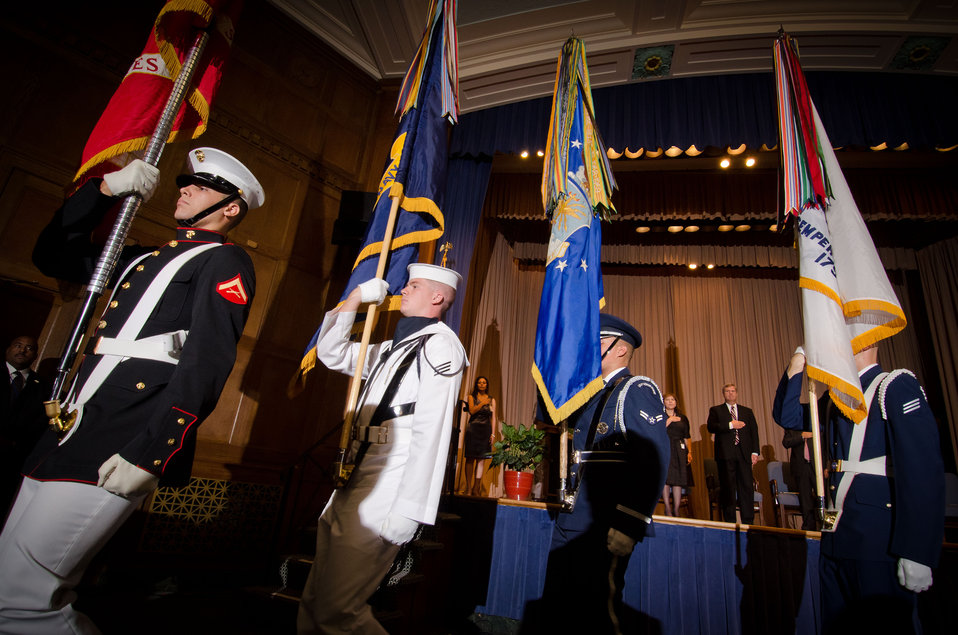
The Military District of Washington Joint Armed Forces Color Guard presented the colors at the start of the National Hispanic Heritage Month observance at the United States Department of Agriculture (USDA), in the Jefferson Auditorium, in Washington, D.C. on Thursday, September 15, 2011. Kristen Donovan (on stage, left) led the singing of the “National Anthem.” Tammye Treviño (on stage, center) provided the introduction of Agriculture Secretary Tom Vilsack (on stage, right).